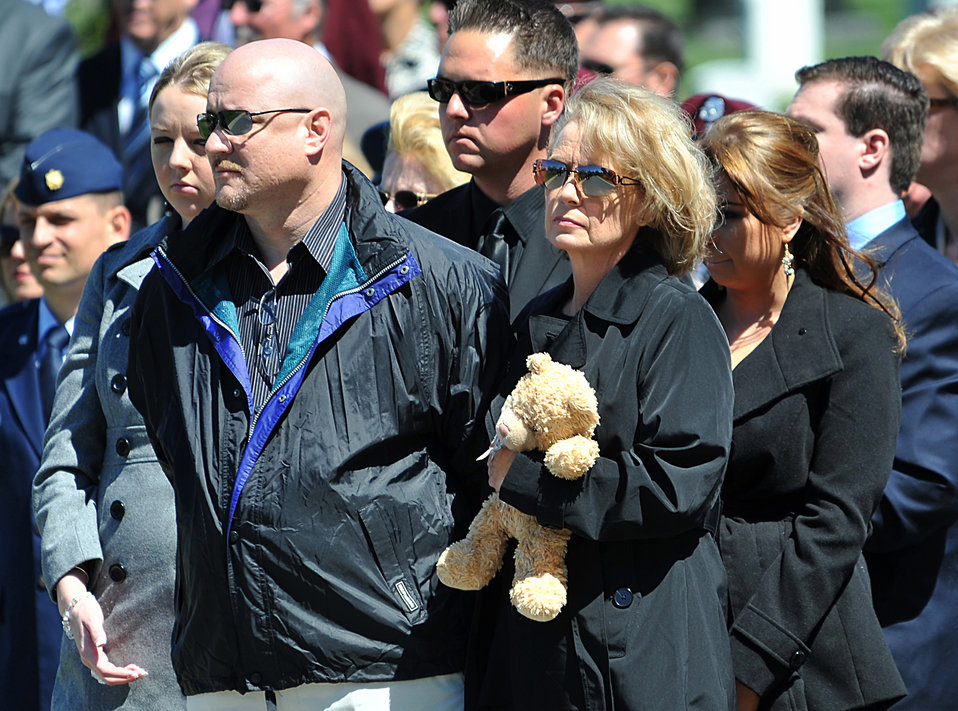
Dignified Transfer

Debbie McBride, holding a teddy bear, and family members watch as U.S. Air Force honor guard Airmen place an urn containing the remains of her father, Tech. Sgt. Allen J. Avery, inside a casket during Avery's burial ceremony at Arlington National Cemetery, Va., April 6, 2012. Avery was part of a combat search and rescue mission aboard an HH-53C Super Jolly Green Giant helicopter when they were shot down over Quang Tri province, South Vietnam, April 6, 1972.